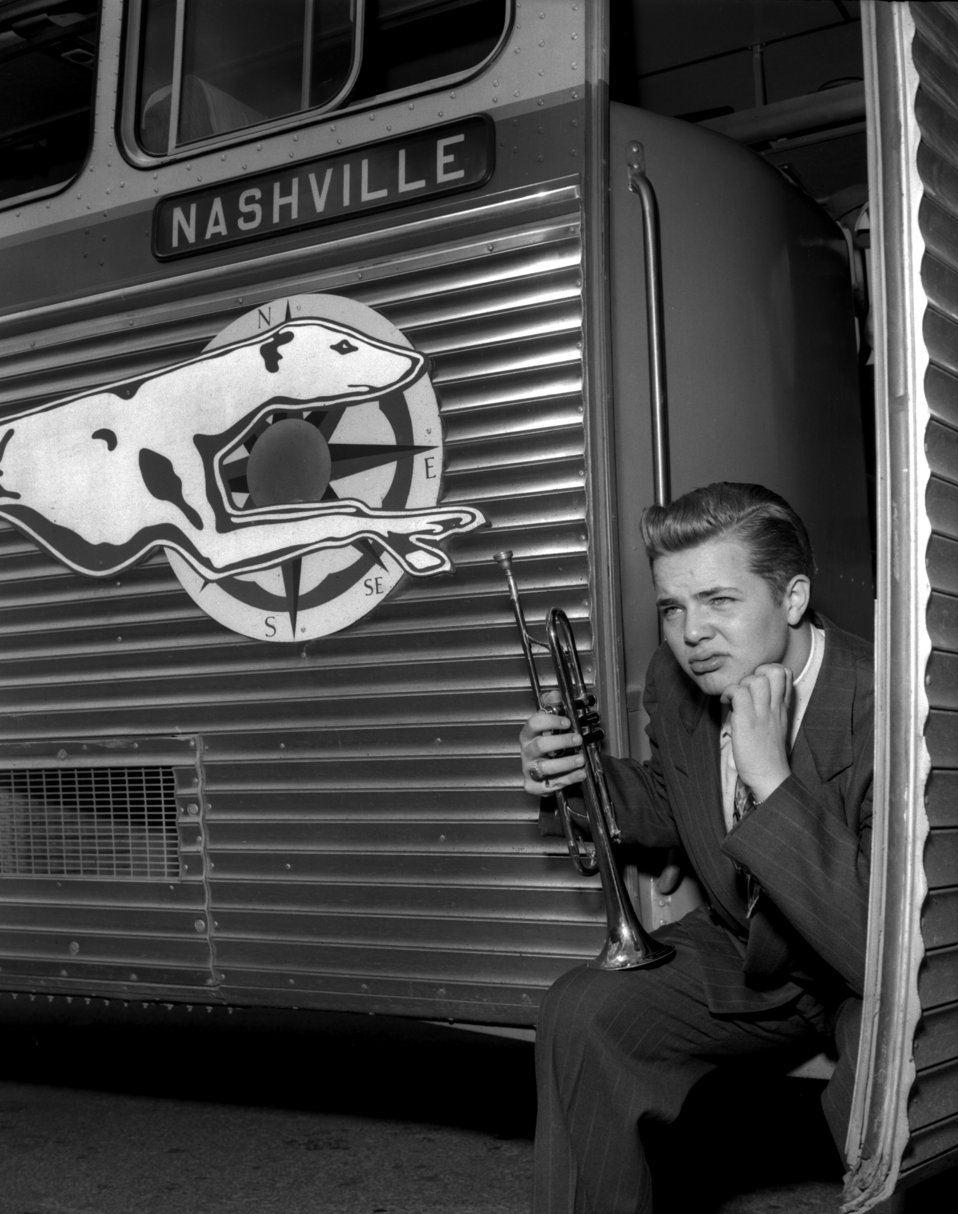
Tennessee State Band Festival Oak Ridge

0045500-8a DOE photo by Ed Westcott

Tennessee State Band Festival Oak Ridge Tennessee 4/29/1948